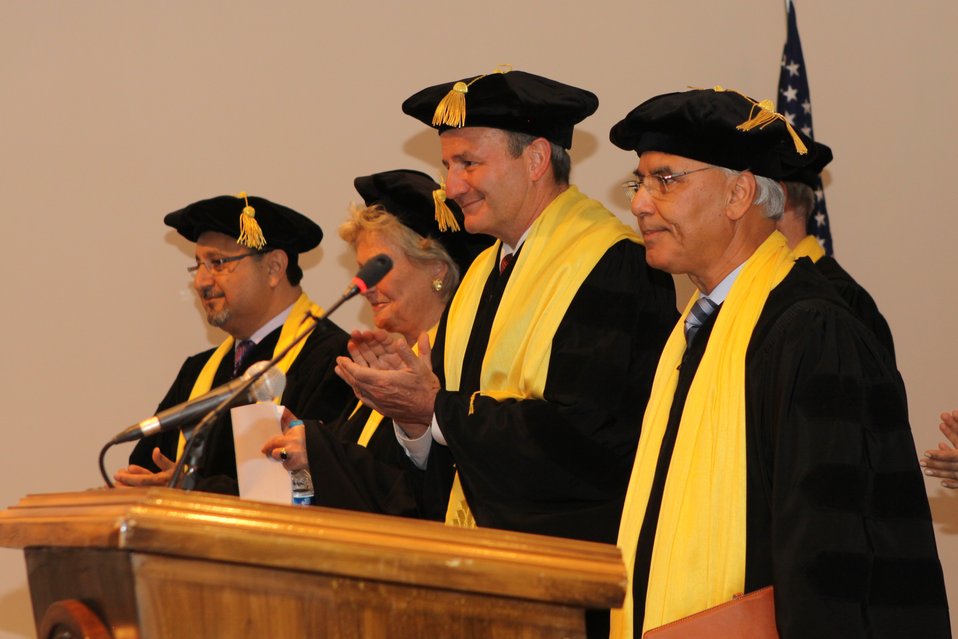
100526 AUAF Graduation 129